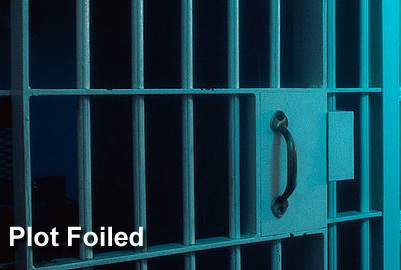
Terrorist plot foiled

Authorities have arrested four individuals who allegedly were planning to shoot down military planes at a New York Air National Guard base and blow up a synagogue and Jewish community center in the Bronx.